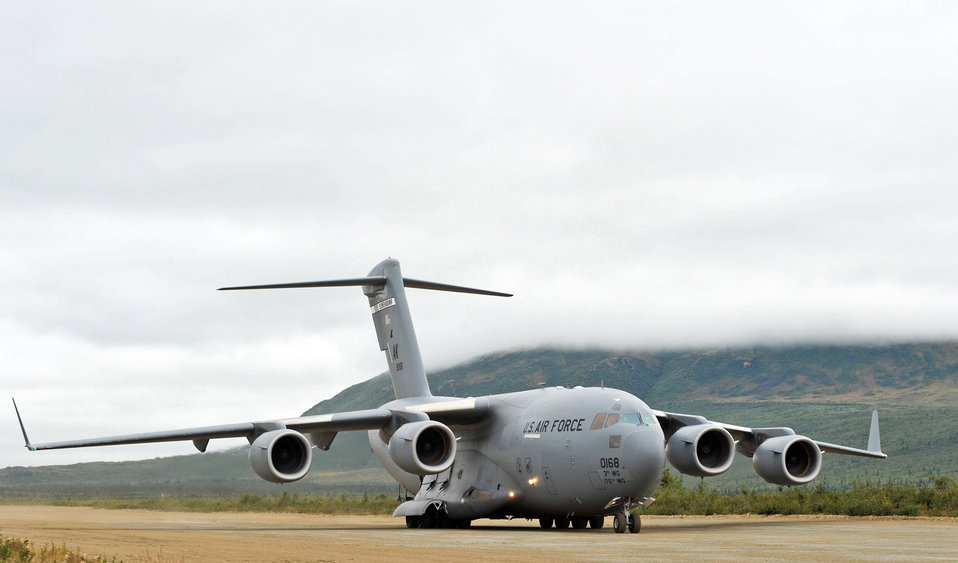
C-17 crew assists Soldiers for Arctic Response

A C-17 Globemaster III from the 517th Airlift Squadron taxies down at an unimproved air strip near Elmendorf Air Force Base, Alaska Aug. 24 to return to base. The aircraft assisted in deploying 120 Soldiers from the 17th Combat Service Support Battalion on Fort Richardson to the airstrip during Arctic Response. Arctic Response is an Army emergency deployment readiness exercise.